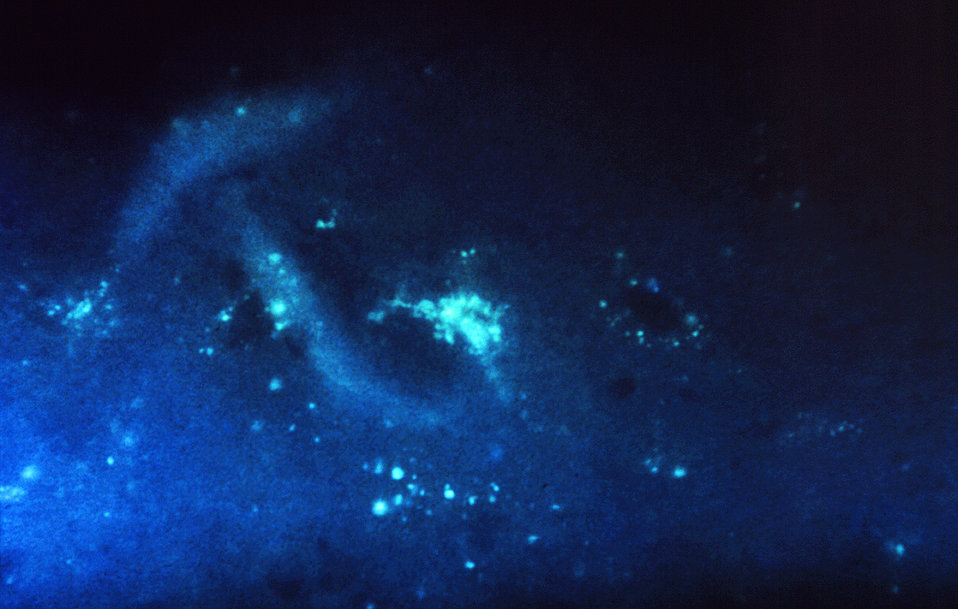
Using a direct fluorescent antibody (DFA) stain, this photomicrograph revealed the presence of rabies viral antigen in a tissue sample harvested from a fox's brain, suspected of being infected with rabies.